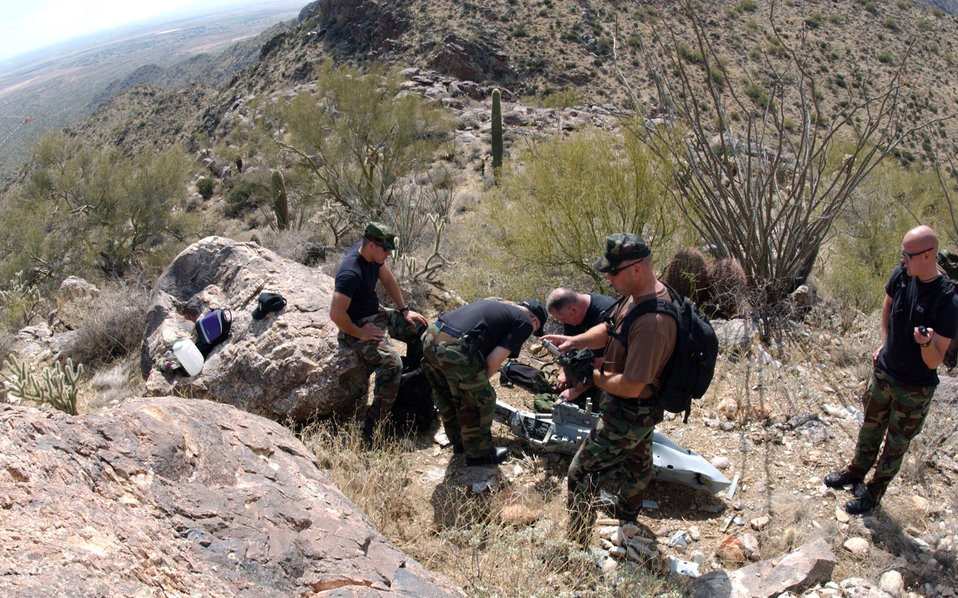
Hiker finds F-16 rack

Airmen with the 56th Civil Engineer Squadron explosive ordnance disposal unit and the 56th Equipment Maintenance Squadron at Luke Air Force Base, Ariz., examine an F-16 Fighting Falcon triple ejector rack in the White Tank Mountains on Thursday, March 23, 2006. The Airmen were ensuring the rack didn't contain unexploded cartridges. The rack was released from a 61st Fighter Squadron F-16 during an in-flight emergency on Aug. 11, 2003. A local resident found the item while hiking and led the Air Force team to the site.